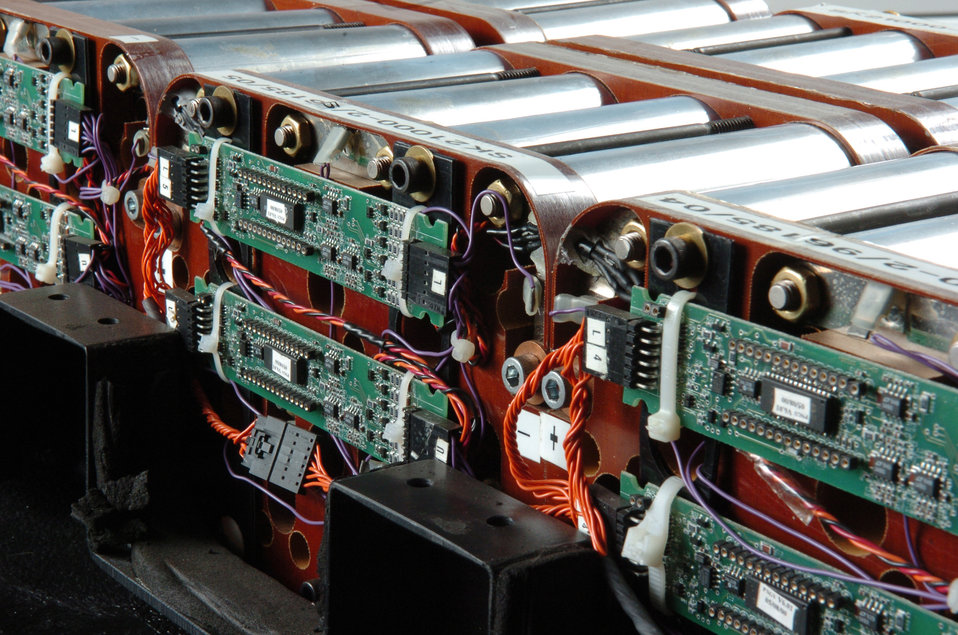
Argonne's Battery Research is aimed at lowering the cost and increasing the lifetime and safety of high-power lithium-ion HEV batteries.

The Advanced Powertrain Research Facility is the nation's premier Hybrid Vehicle Test Laboratory, where the latest equipment and state-of-the-art transportation technology come together for development. .